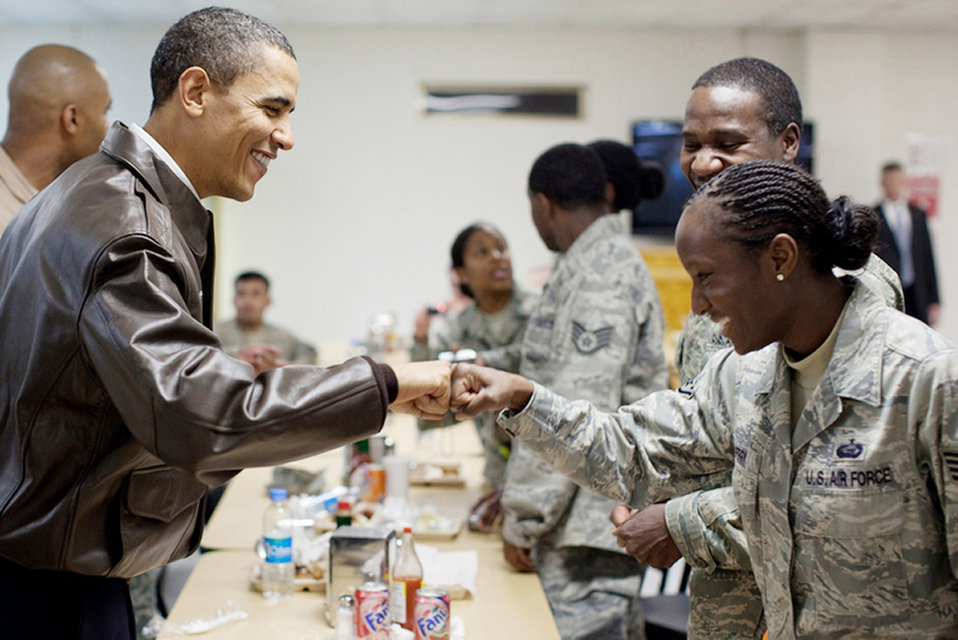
Fist-bumping the Commander in Chief

President Barack Obama meets U.S. troops at a dining hall March 28, 2010, Bagram Airfield, Afghanistan.